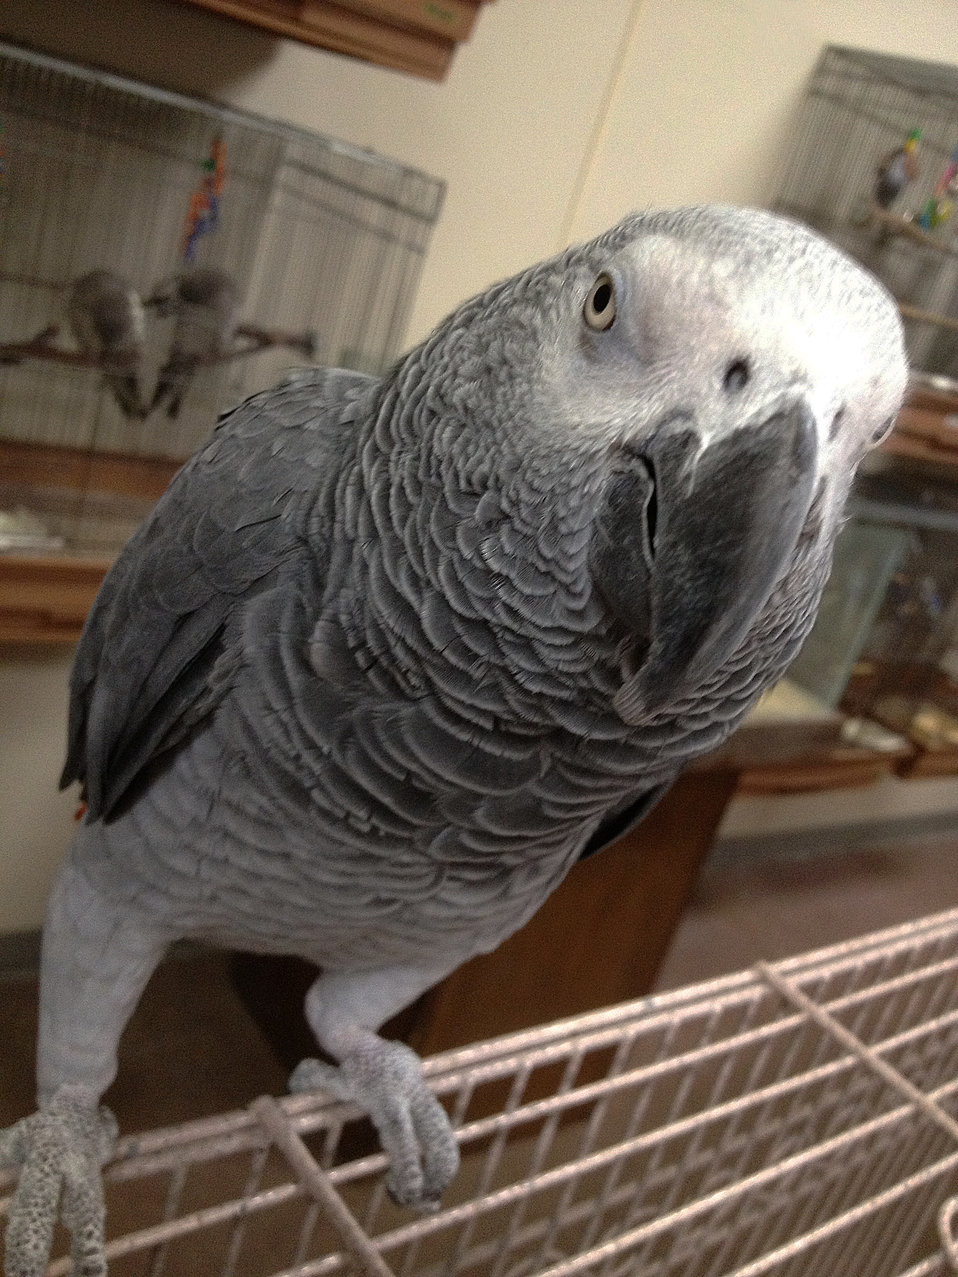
This image depicts a curious African Grey parrot, Psittacus erithacus, perched atop his cage in a pet store. This bird can be found in its natural habitat in the West and Central African rain forests.